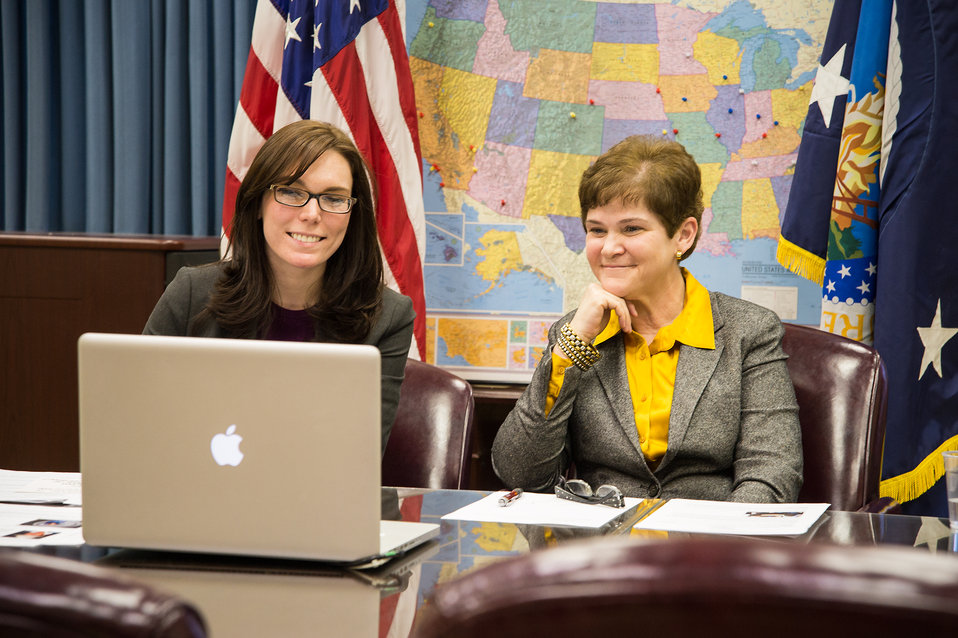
U.S. Department of Agriculture (USDA) Beginning New Farmer and Rancher Program Coordinator Lilia McFarland and Agriculture Deputy Secretary Krysta Harden host a Goggle Hangout on the USDA's commitment to new farmers to build the new generation of agriculture with farmers in Washington, D.C. on Monday, Feb. 24, 2014. Aledo IL corn and soybean farmer Kate Danner and Forest Grove, OR Mujeres farmers Alejandro Tecum, and Adelante participated online in the discussion. USDA Photo Bob Nichols